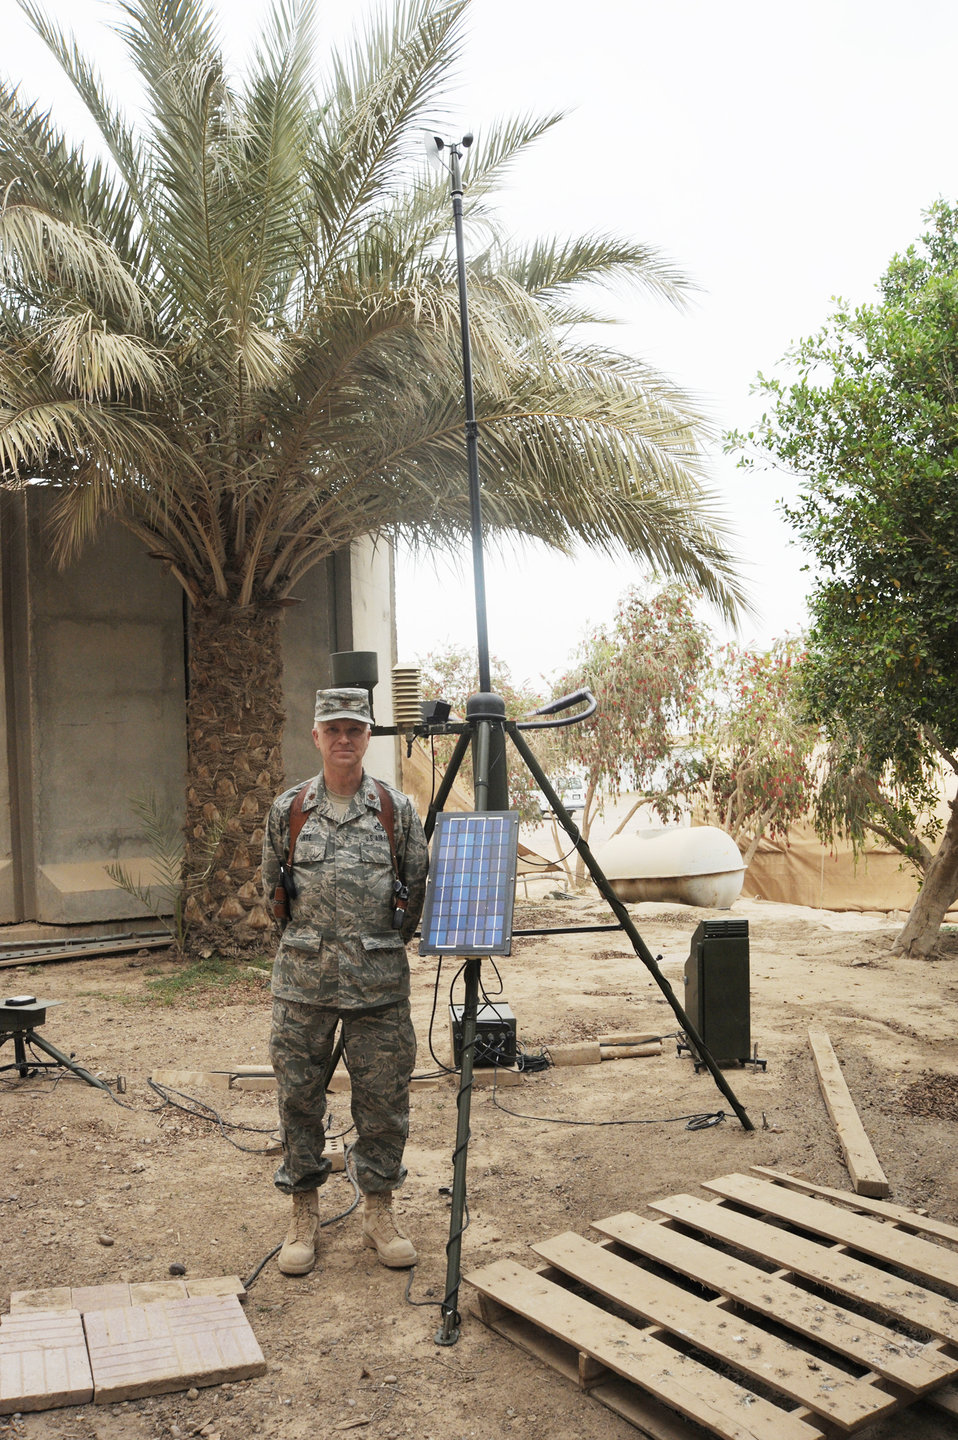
Iraqi weathermen graduate

Air Force Major Barry Hunte, 321st Air Expeditionary Advisory Group Air Operations Center weather advisor, stands next to the Tactical Meteorological Observation System used during the 52-day course to train the first class of Iraqi air force meteorology officers. The class graduated March 25, 2010 at Camp Victory, Iraq. During the course, the eight Iraqi military students were instructed on everything from basic weather observations to advanced weather forecast models.